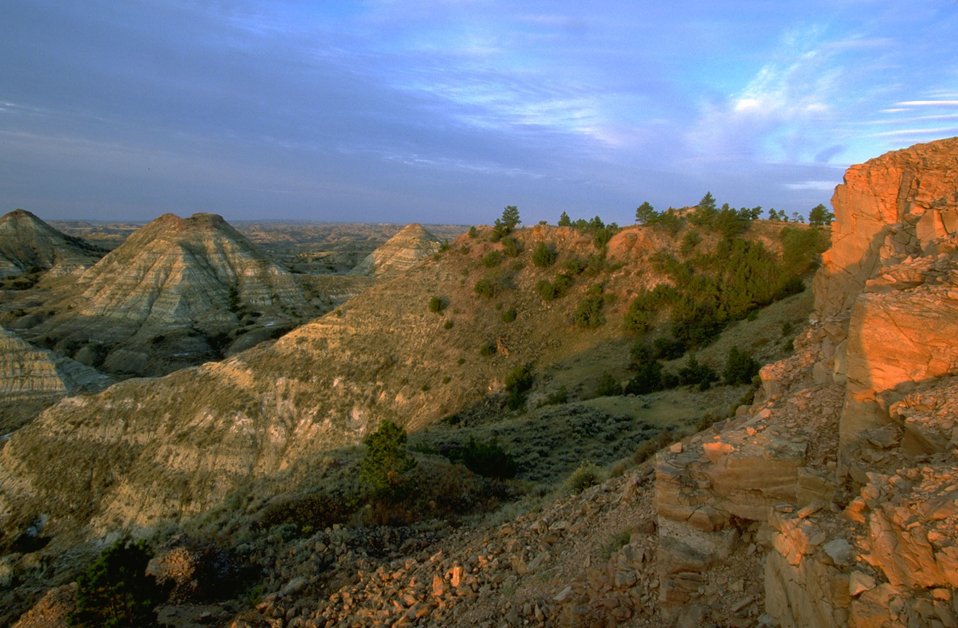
Terry Badlands Wilderness Study Area